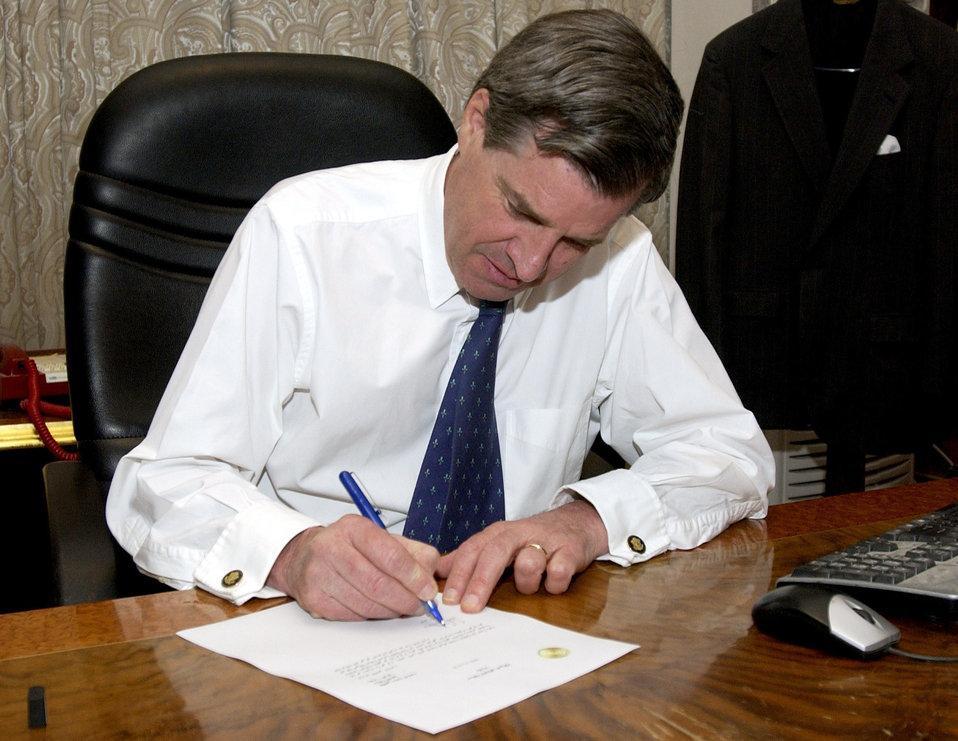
U.S. occupation officially ends

BAGHDAD, Iraq -- L. Paul Bremer III signs the Iraqi sovereignty document in his office at the Coalition Provisional Authority headquarters here June 28. By signing the document, he transferred authority to the interim Iraqi government.